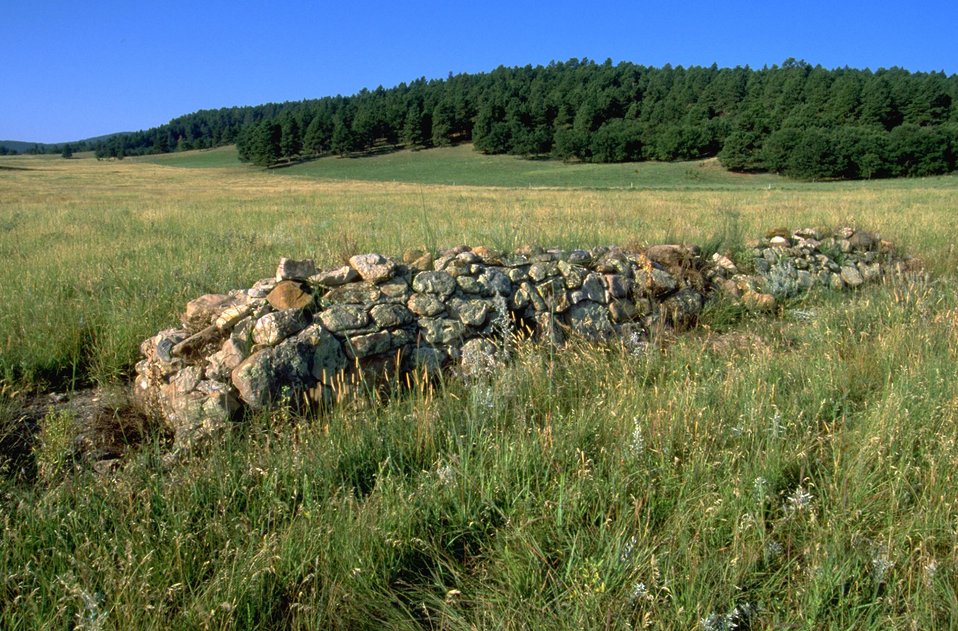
Cavalry Jumps at south end of Fort Meade